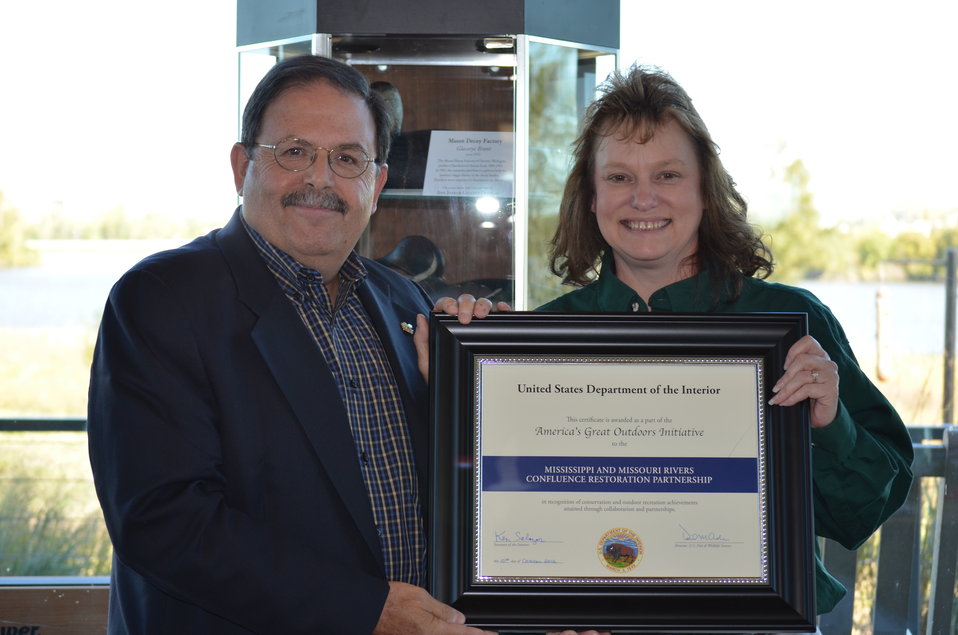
The Nature Conservancy honored

Stephen Mahfood, representing the Nature Conservancy, presented award from Department of Interior for TNC's role in the advancement of confluence floodplain conservation. TNC provided financial support for a full time USFWS biologist for the Confluence Focus Area, which has become a substantial asset to initiate innovative and cooperative approaches to conserve the natural, cultural and historic significance of the confluence. USFWS/Ashley Spratt